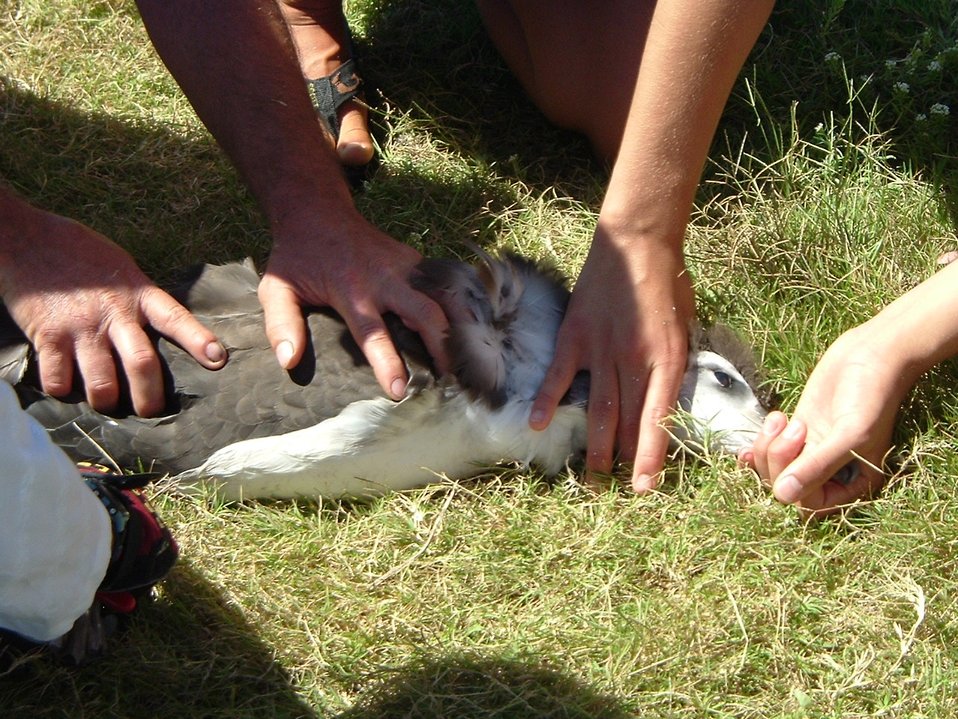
Banding albatross on Kure.